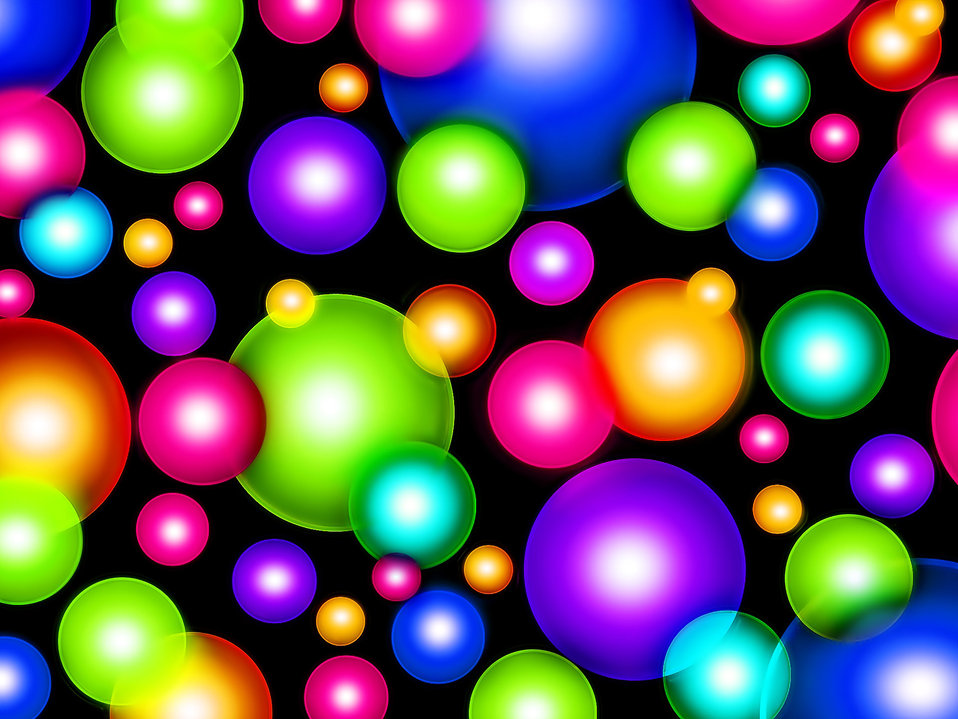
Background 390

Background.